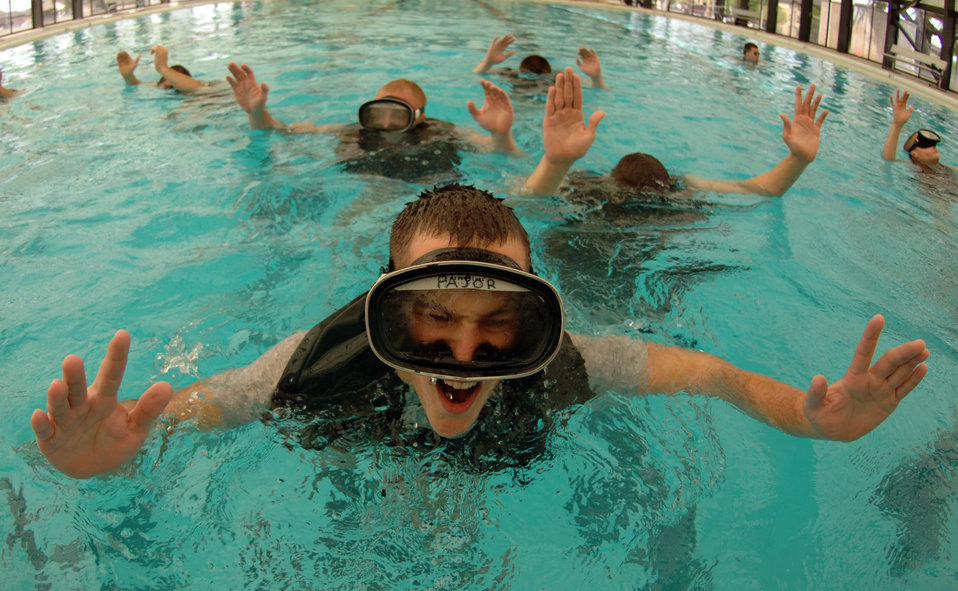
'That others may live'

Airman 1st Class Brian Pajor treads water with 16-pound weights on his belt during the pararescue indoctrination training course at Lackland Air Force Base, Texas, on Thursday, April 6, 2006. The 10-week indoctrination, with its intense physical and mental training, is the first hurdle for pararescue hopefuls.